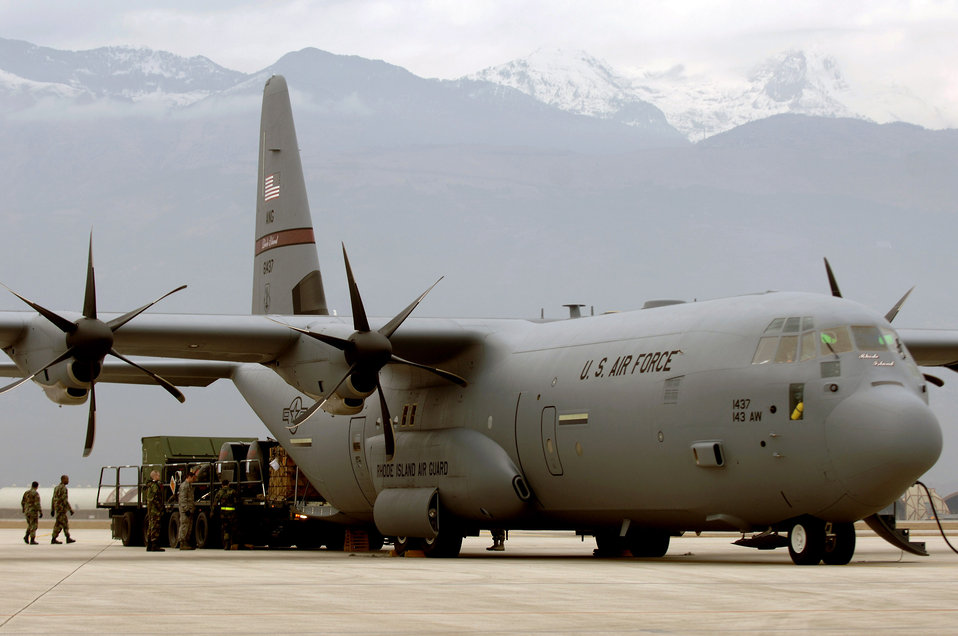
Total force provides seamless airlift support

Airmen load 25,000 pounds of cargo onto a C-130 Hercules Jan. 9 at Aviano Air Base, Italy. A six-member Air National Guard-based crew from the 143rd Airlift Wing at Quonset State Airport near Providence, Rhode Island, delivered the cargo to Zaragoza Air Base, Spain, in support of a month-long training exercise for a dozen F-16 Fighting Falcons.